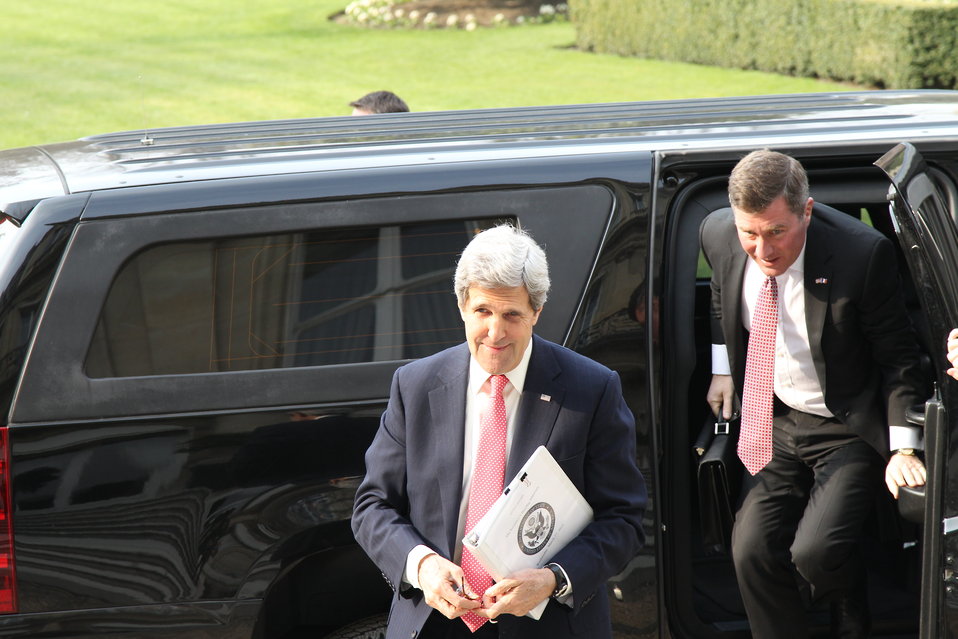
Secretary Kerry Arrives at the U.S. Ambassador to France Residence

U.S. Secretary of State John Kerry arrives at the U.S. Ambassador to France residence in Paris, France on March 27, 2013.